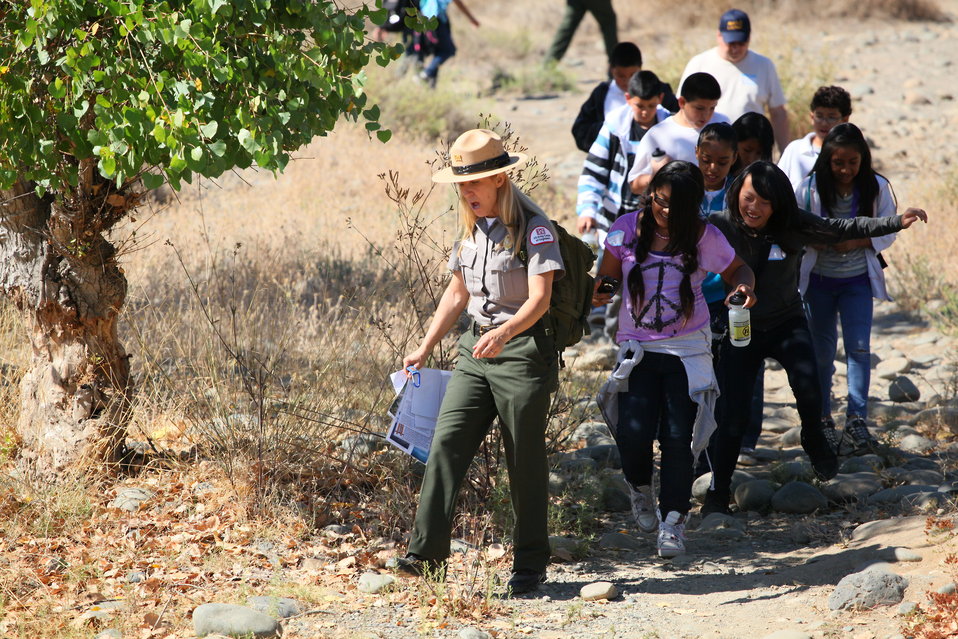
America’s Great Outdoors event at the Effie Yeaw Nature Center

U.S. Army Corps of Engineers park ranger Heather Wright leads students from Maple Elementary School on a nature hike at the Effie Yeaw Nature Center in Carmichael, Calif., Sept. 27, 2011. The event was in support of President Barack Obama’s America’s Great Outdoors Initiative, established in April 2010, to reconnect the American people with the outdoors.